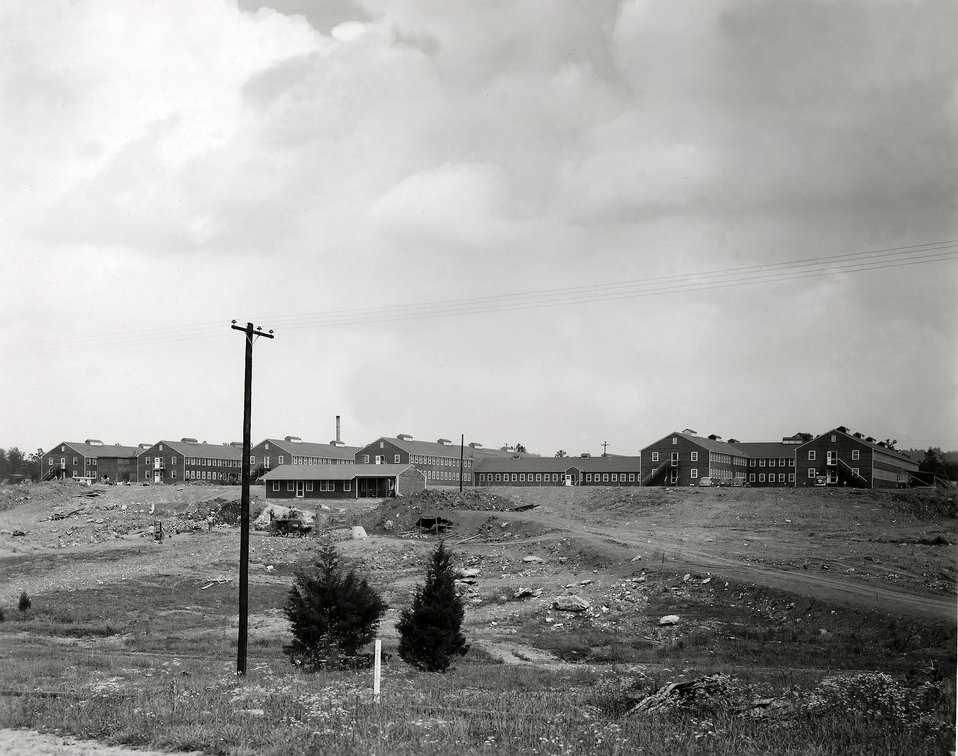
MED Adm. Building with Entrance Gate in Foreground, Construction progress Oak Ridge

S-10 DOE photo Ed Westcott 1943 Oak Ridge Tennessee